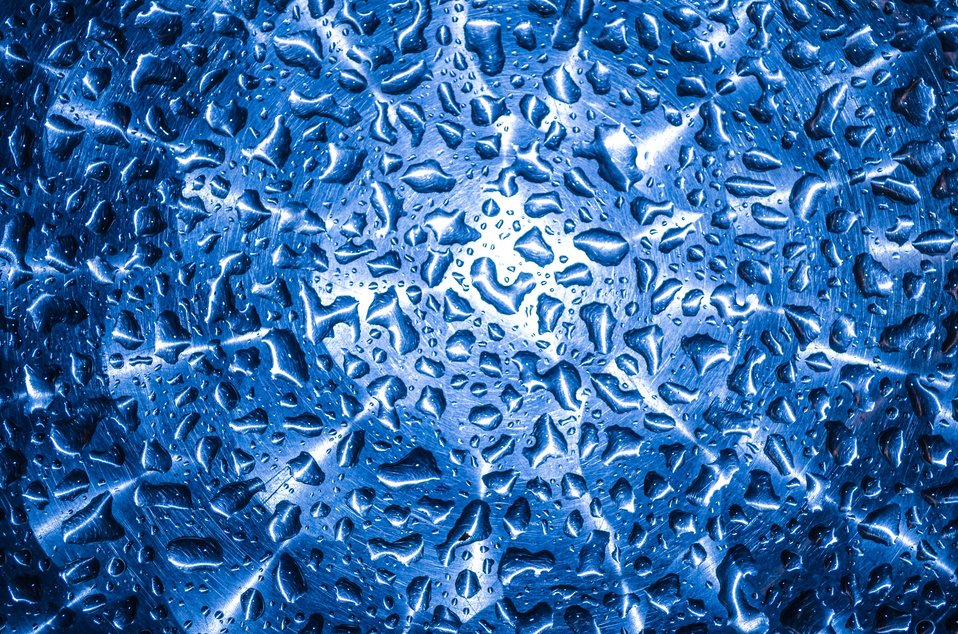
Water drops.